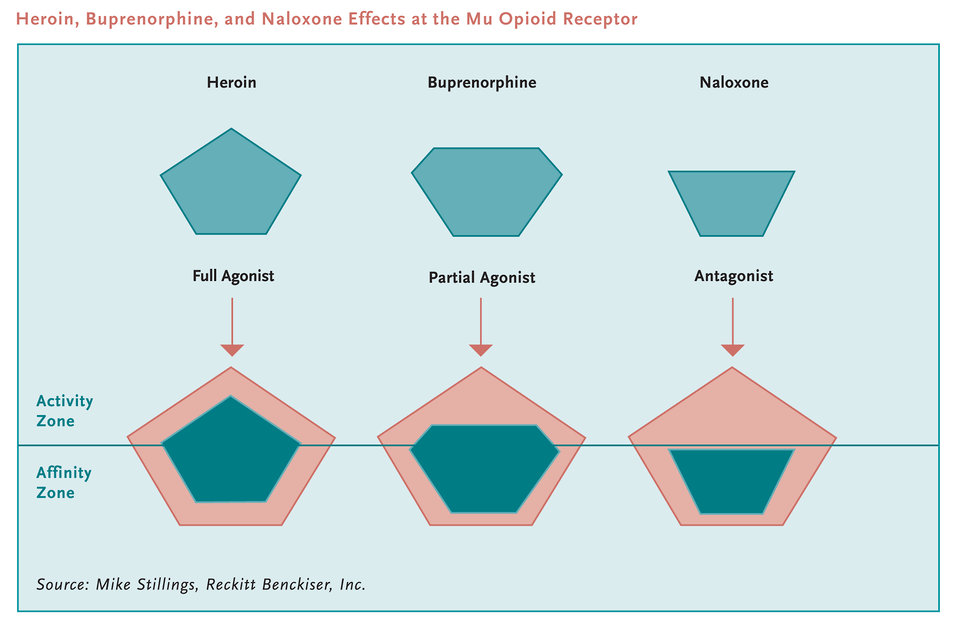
Diagram

Heroin, buprenorphine, and naloxone effects at the mu opioid receptor